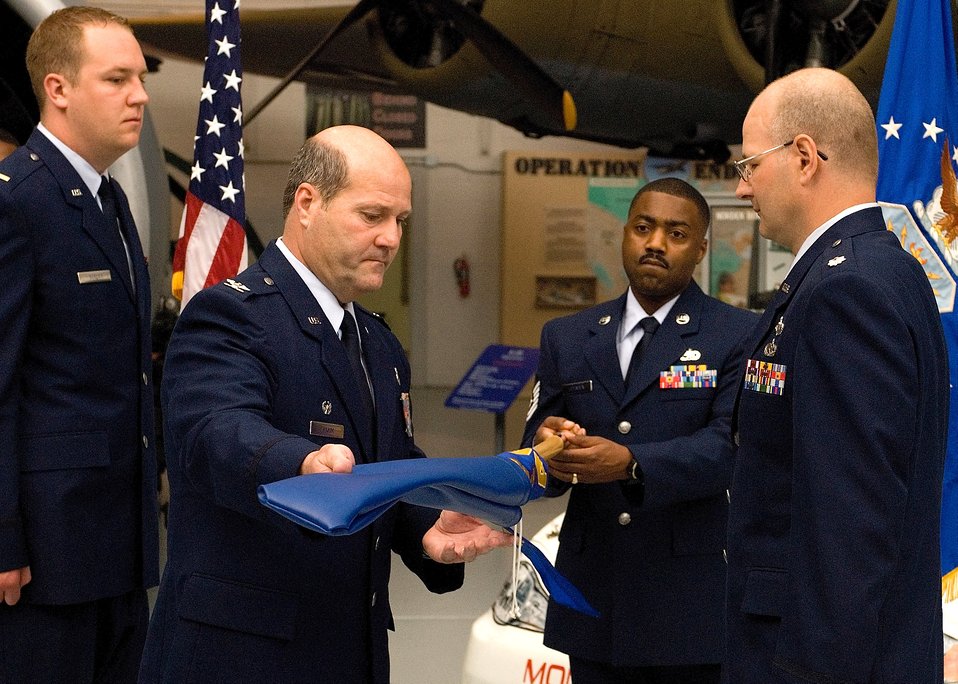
Dover stands up new C-17 maintenance squadron

Col. Robert Hamm, 436th Maintenance Group commander, uncases the guidon of the new 736th Aircraft Maintenance Squadron before handing it to Lt. Col. Raymond Briggs, 736th AMXS commander, April 30 at Dover Air Force Base, Del. The 736th AMXS stood up in an assumption-of-command ceremony and will be responsible for maintaining the C-17 Globemaster IIIs, scheduled to start arriving in June.